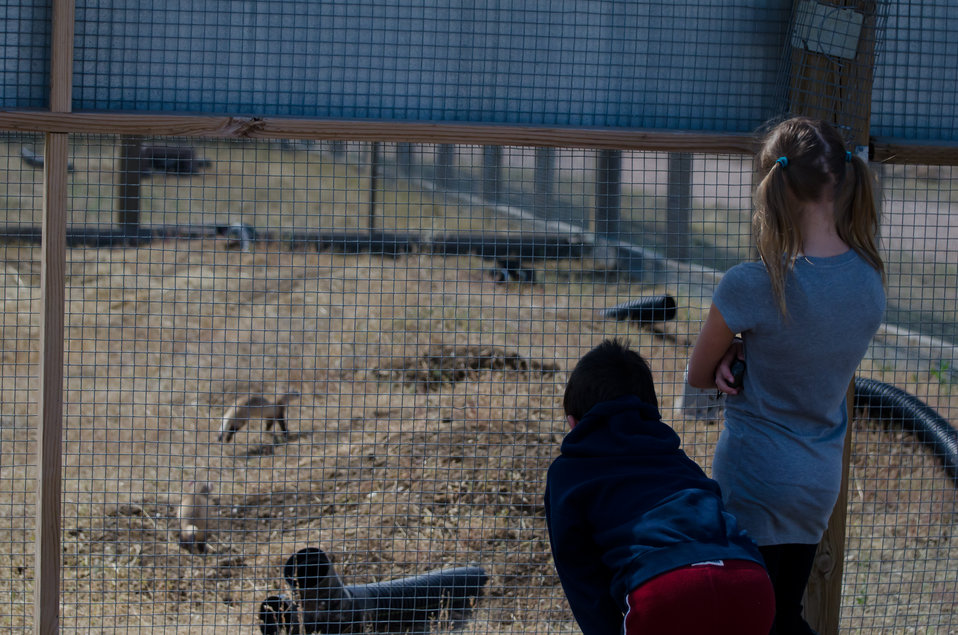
Hannah Watches the Kits

Hannah and Noreen's daughter were treated to an up-close-and-personal viewing of the kits in their conditioning pen during the visit.